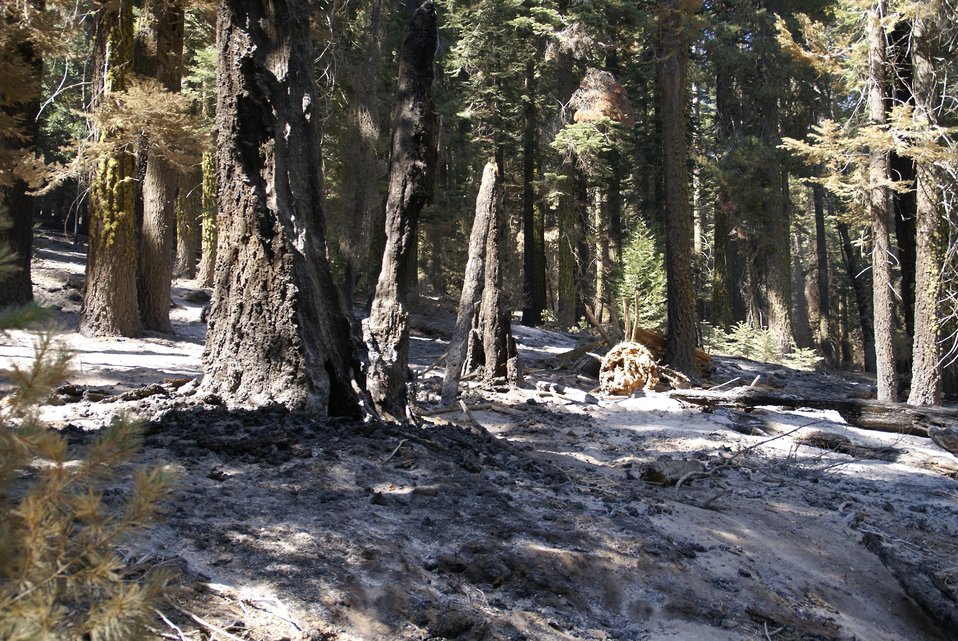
The East side of Bourland drainage area about a half-mile below the 3N01 road shows damage from the Rim Fire. BAER is a rapid assessment of burned watersheds by a BAER team to identify imminent post-wildfire threats to human life and safety property and critical natural or cultural resources on National Forest System lands and take immediate actions to implement emergency stabilization measures before the first major storms. Fires result in loss of vegetation exposure of soil to erosion and increased water runoff that may lead to flooding increased sediment debris flows and damage to critical natural and cultural resources. BAER team members implement seeding and mulching installation to prevent erosion, erect temporary water run-off control structures that will protect recovering areas, and installation of warning signs, replace safety related facilities, remove safety hazards, prevent permanent loss of habitat for threatened and endangered species, and prevent the spread of noxious weeds and protect critical cultural resources. The Rim Fire in the Stanislaus National Forest near in California began on Aug. 17, 2013 and is under investigation. The fire has consumed approximately 256,169 acres and is 84% contained.